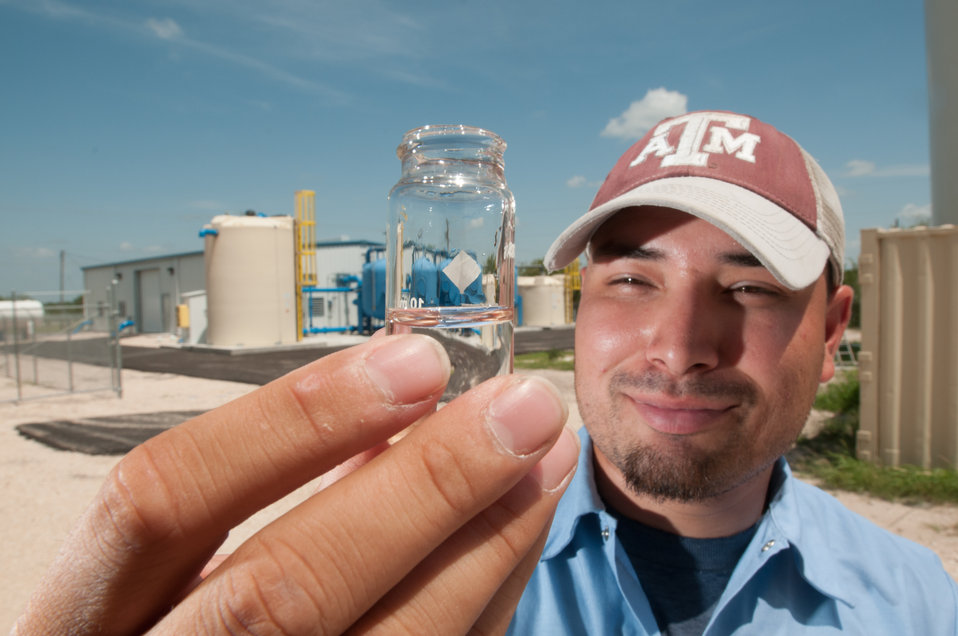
Anthony Arredondo takes a processed water sample at the Freer Water Control and Improvement District Arsenic Removal System Site in Freer, TX on Tuesday, June 18, 2013.

Freer Water Control and Improvement District (FWCID) benefits from the financial assistance of the U.S. Department of Agriculture (USDA) Rural Development (RD) to complete a two-phase approach to meeting the city’s water supply and safety needs, on Tuesday, June 18, 2013. Although, the naturally occurring arsenic levels have remained constant for more than a century, the Environmental Protection Agency (EPA) safe level standards have established lower levels of arsenic to be safe for human consumption. To meet those levels FWCID approached USDA and was awarded a $986,000 loan for Phase I, to install two new water wells, each rated at 167 gallons per minute (creating a total of eight wells); 13,600 feet of well collection lines; and 15,000 linear feet of well control line to remotely control the well pumps and the 1,000,000 gallon holding tank at the well facility, which supplies water to the new Arsenic Removal System (Phase II). Previously, water was manually controlled by personnel who knew when and how long to manually opened and closed water valves or started well pumps to ensure holding tank levels were within operating levels during peek and slack times of the day. Phase II was a combination of a $1,832,000 loan and a $1,258,750 grant, which provided for the customized arsenic removal system, seen in these photos. The system includes a new 3,530 sp. ft. facility, on a .76-acre site, and houses the operations room, computer and power system, laboratory room, and pump systems. The entire operation can be monitored through a desktop computer interface system. The computer-controlled system ensures raw water is fed to the pump system, which works in sequence to maintain a constant pressure to the system, when needed to pump water through (blue) arsenic removal absorber vessels, and then to ground storage tanks that feeds the residential and commercial needs of the city. Samples of water are periodically tested; and so far the arsenic levels have been below 1 part per billion (PPB), well under the 10 PPB limit.